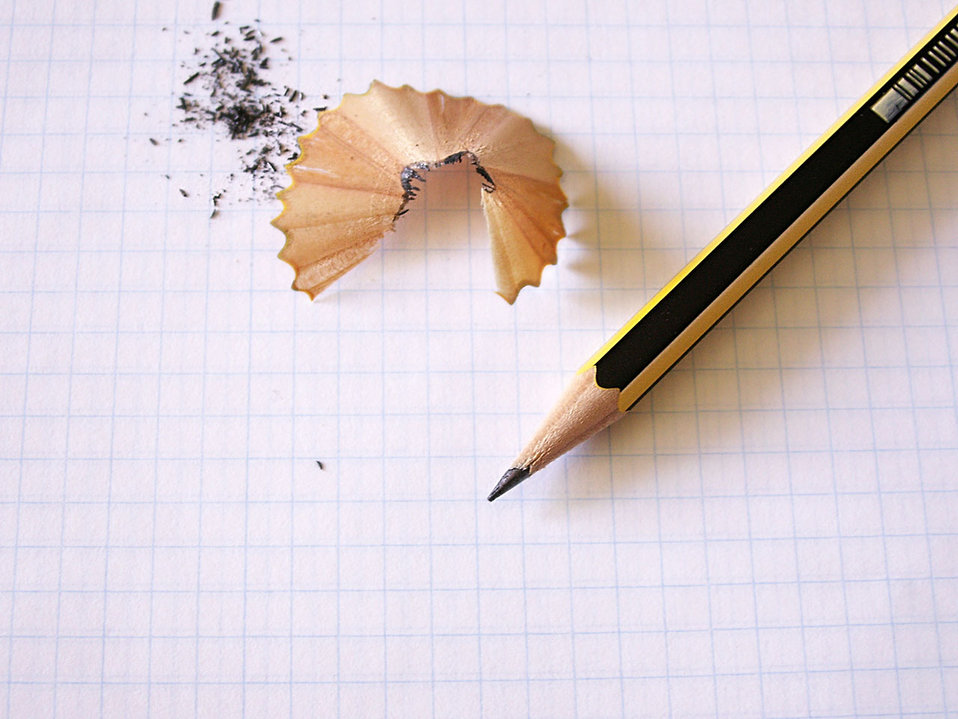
Pencil

A pencil on a notepad.